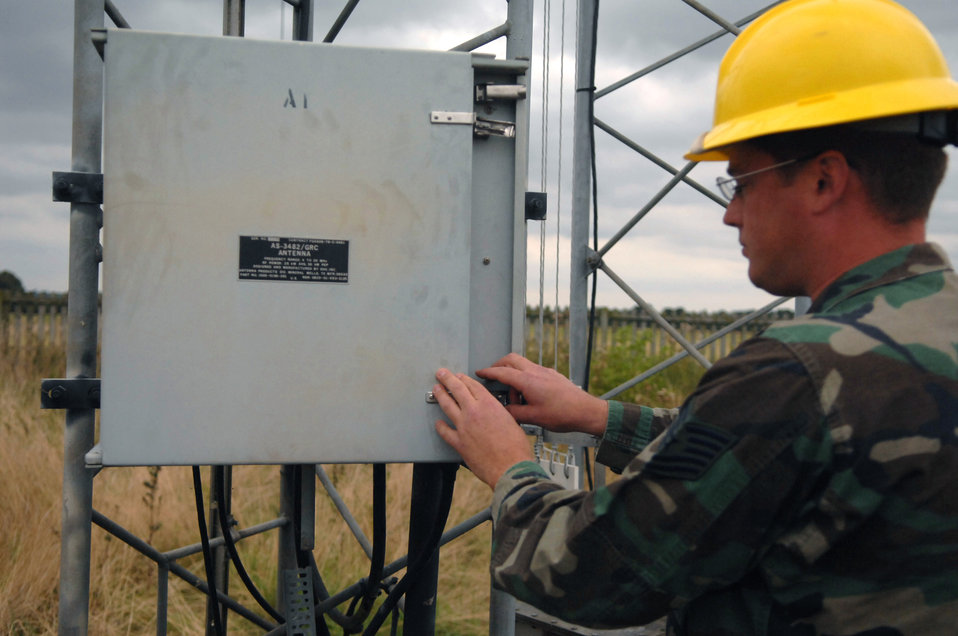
Airmen ensure communications capability for joint, coalition success

Tech. Sgt. Scott Dunbar accesses the control panel to a radio tower Sept. 18, 2009, at Royal Air Force Barford, England. Sergeant Dunbar is a member of the 1st Communications Maintenance Squadron cable and antenna theater maintenance team.